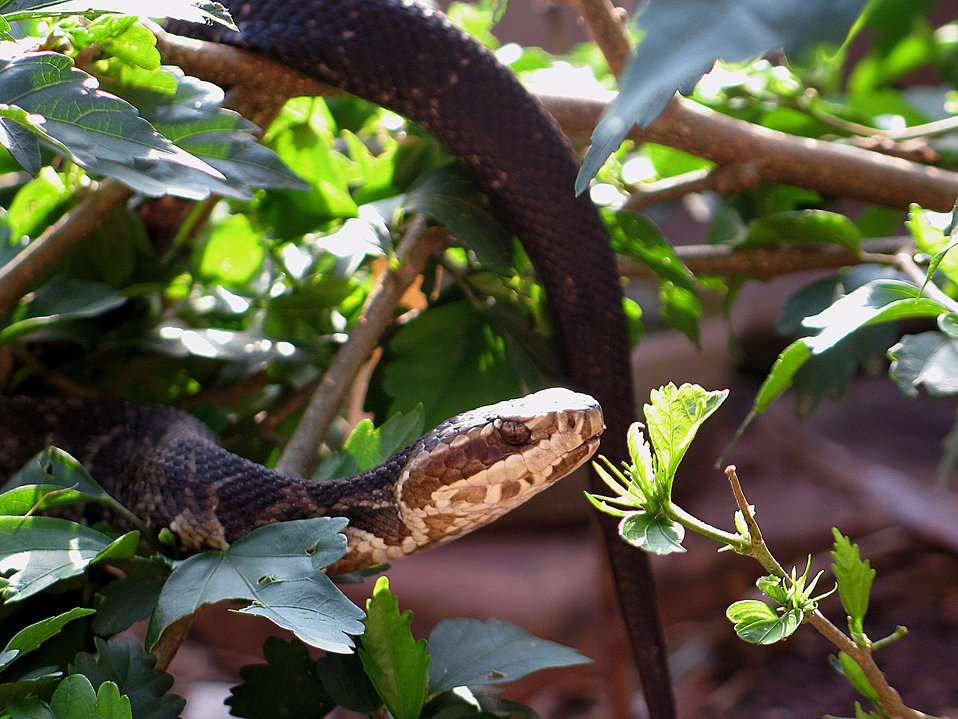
This 2005 photograph depicted a 'Florida cottonmouth' snake, Agkistrodon p. conanti, as it was climbing amongst foliage in its native Floridian habitat.When one thinks about snakes indigenous to the hurricane prone areas in the southeastern United States, the cottonmouths or water moccasins are probably the first snakes to come to mind, which is of importance to those who either live in these regions, or who might be deployed to such areas as a first-responder offering aid to those affected by such a disaster. The cottonmouths are large, dark, heavy-bodied snakes that are the largest snakes in the New World Agkistrodon species complex, and are the only members of the group that are semiaquatic (Gloyd and Conant, 1990). Three distinct subspecies are currently recognized; the 'eastern', 'Florida', and 'western' cottonmouths.